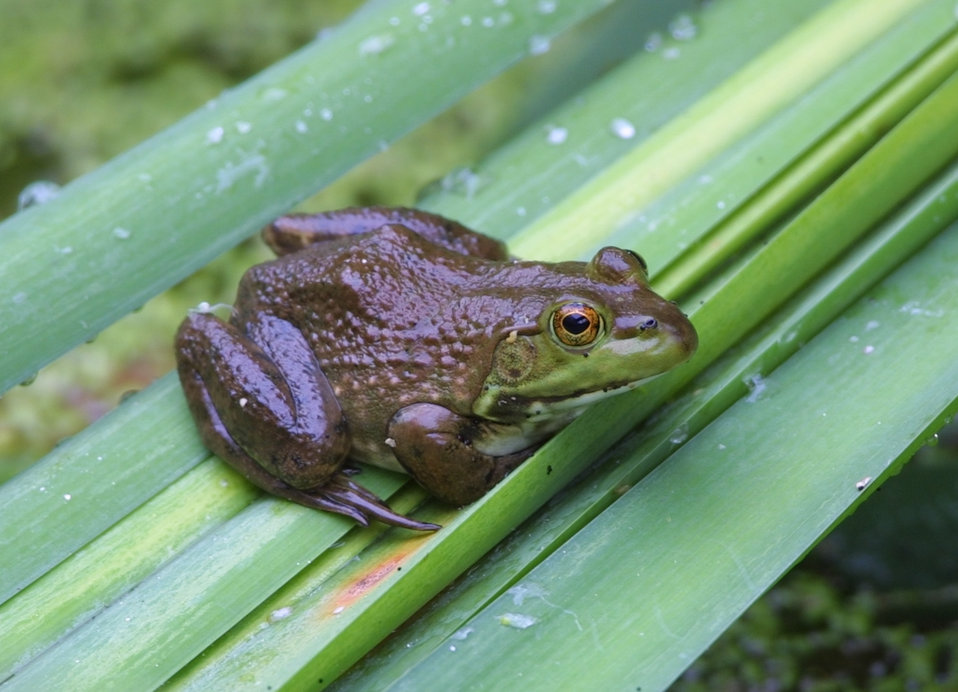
Bull frog at John Heinz National Wildlife Refuge in Philadelphia, Pennsylvania.